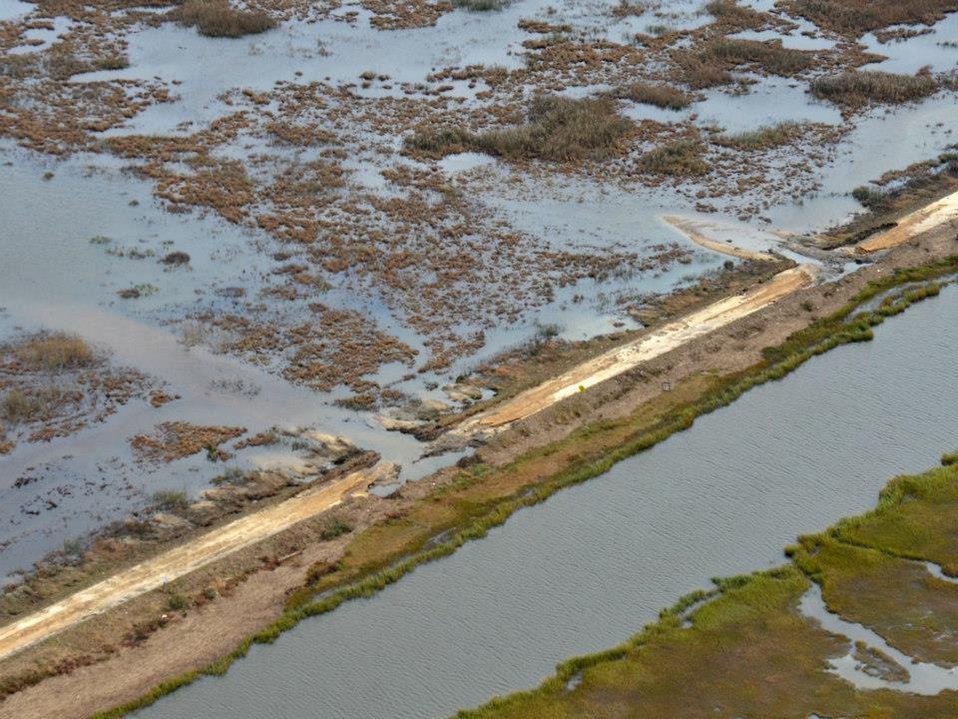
Aerial view of damage at Edwin B. Forsythe National Wildlife Refuge (NJ)

Helicopter view of the south dike. Extensive sections of the south dike of the wildlife drive now look like this.